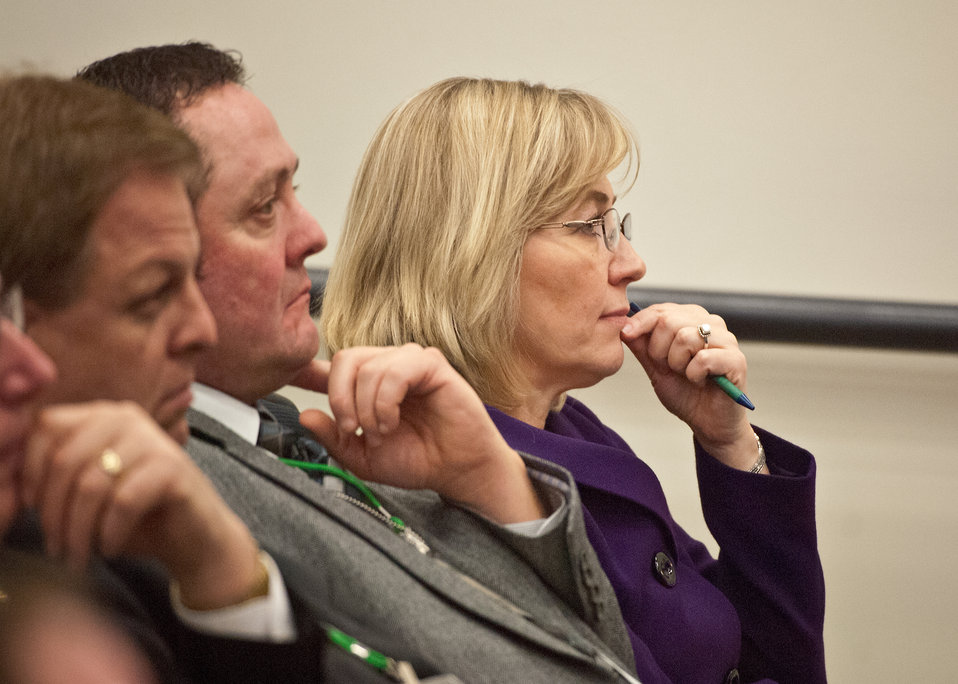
Jennifer Yerzak, Director, External and Intergovernmental Affairs, Office of Congressional Relations coordinated the 11th Annual Meeting of State Agriculture and Rural Leaders at the Eisenhower Executive Office Building in Washington, D.C., on Friday, January 6, 2012.